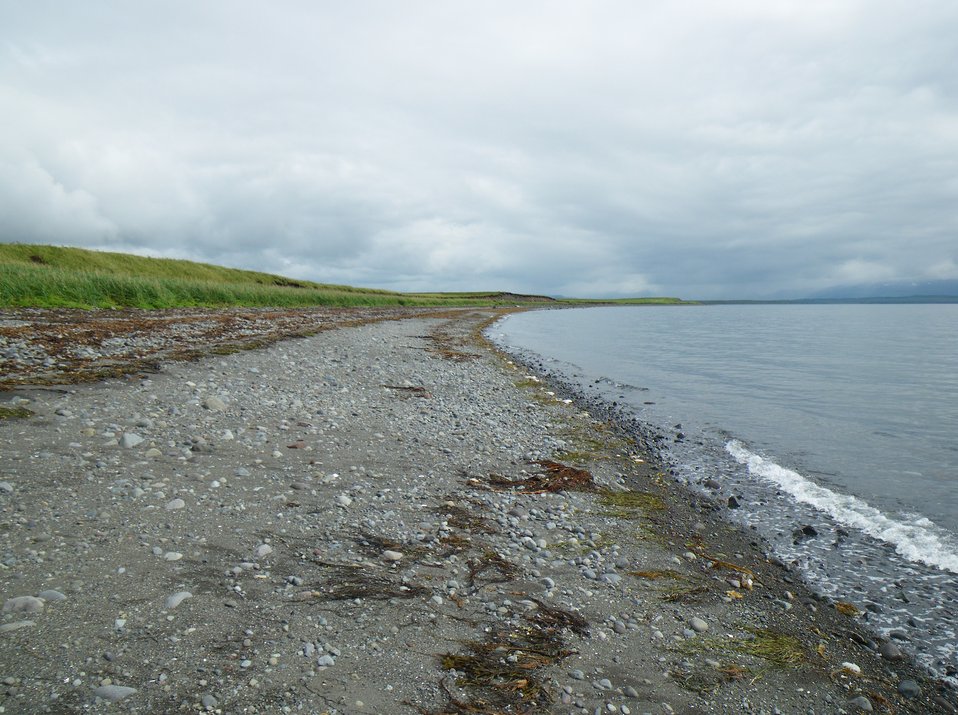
Beach in Kinzarof Lagoon

Kinzarof Lagoon, Izembek National Wildlife Refuge